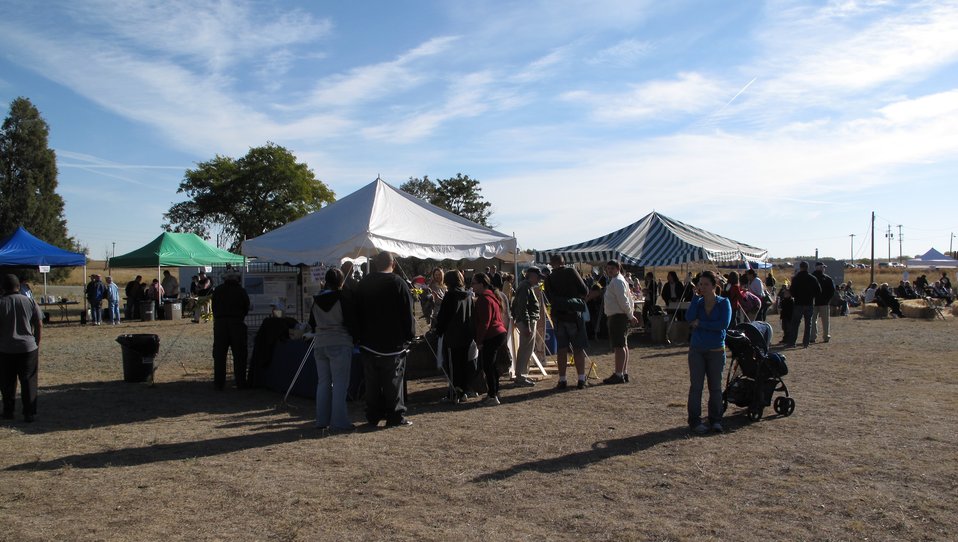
Refuge Round-up 2010